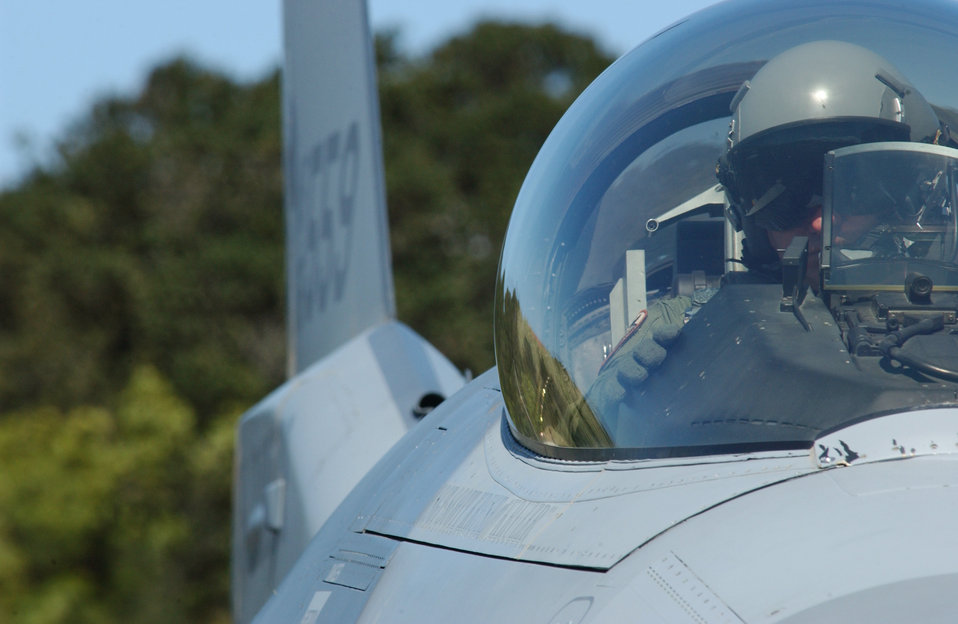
Rest stop

LAJES FIELD, Azores -- Col. Russ Walz taxis in his F-16 Fighting Falcon here May 14 on his way back from a deployment. Colonel Walz is assigned to the South Dakota Air National Guard's 114th Fighter Wing at Joe Foss Field.